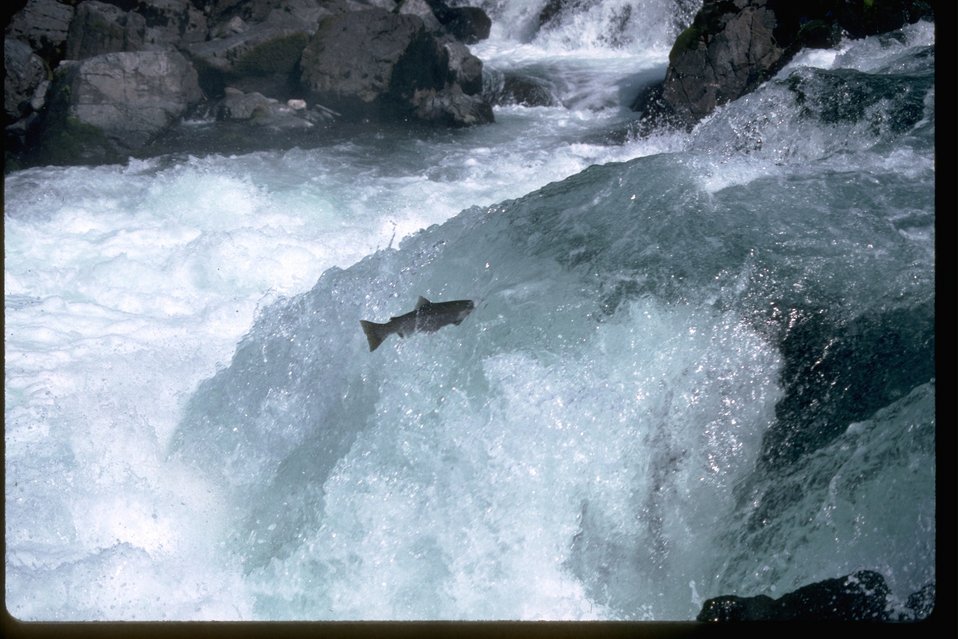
Salmon or Steelhead jumping up falls.